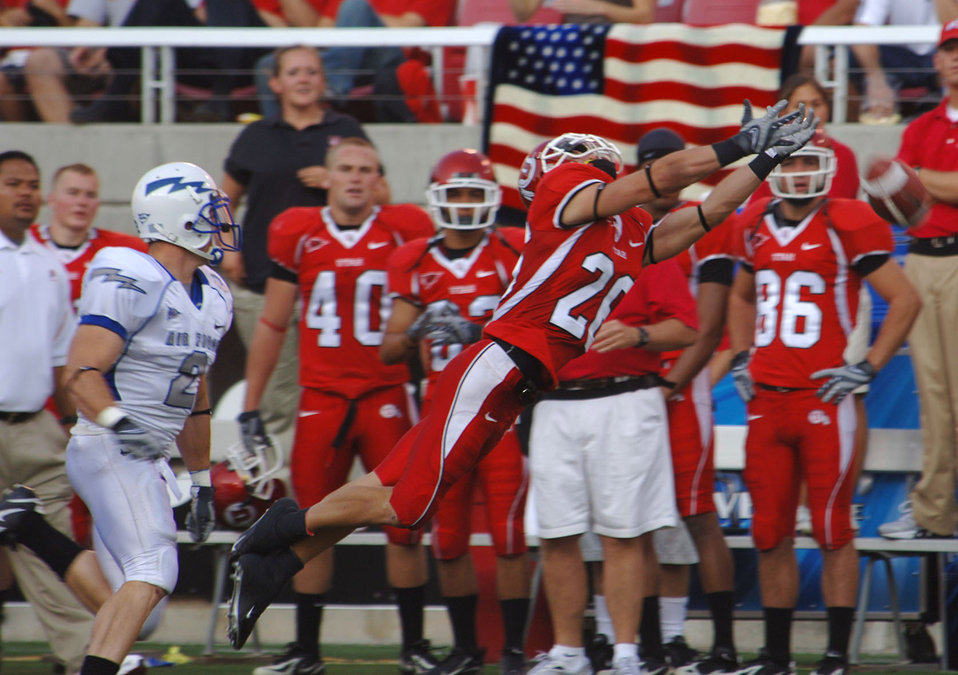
Football: Falcon defense stops Utah, 20-12

U.S. Air Force Academy Falcons senior cornerback Carson Bird watches as Utah wide receiver Derrek Richards lunges in vain for an overthrown pass during Air Force's 20-12 win Sept. 8 in Salt Lake City.